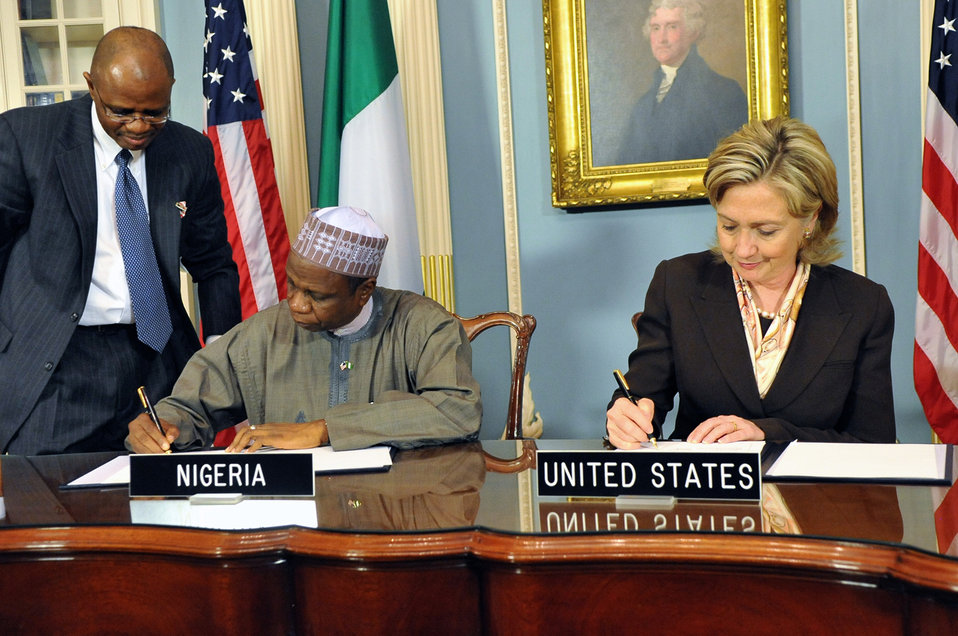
Secretary Clinton Meets With Nigerian Secretary to the Federal Government

U.S. Secretary of State Hillary Rodham Clinton holds a bilateral meeting with Nigerian Secretary to the Federal Government Yayale Ahmed, at the U.S. Department of State in Washington, DC April 6, 2010.